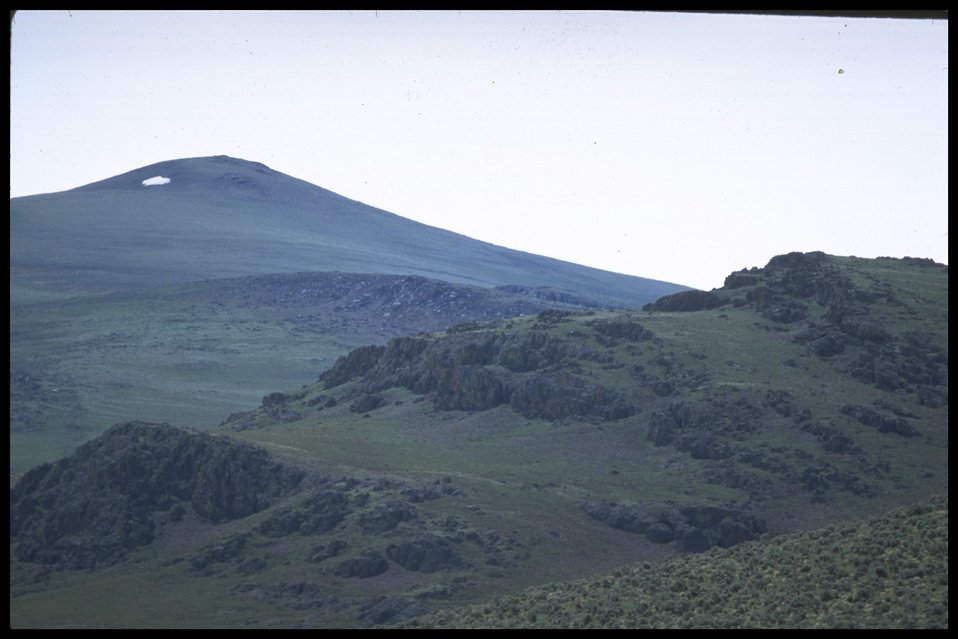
Scenic view of butte, Lakeview District.